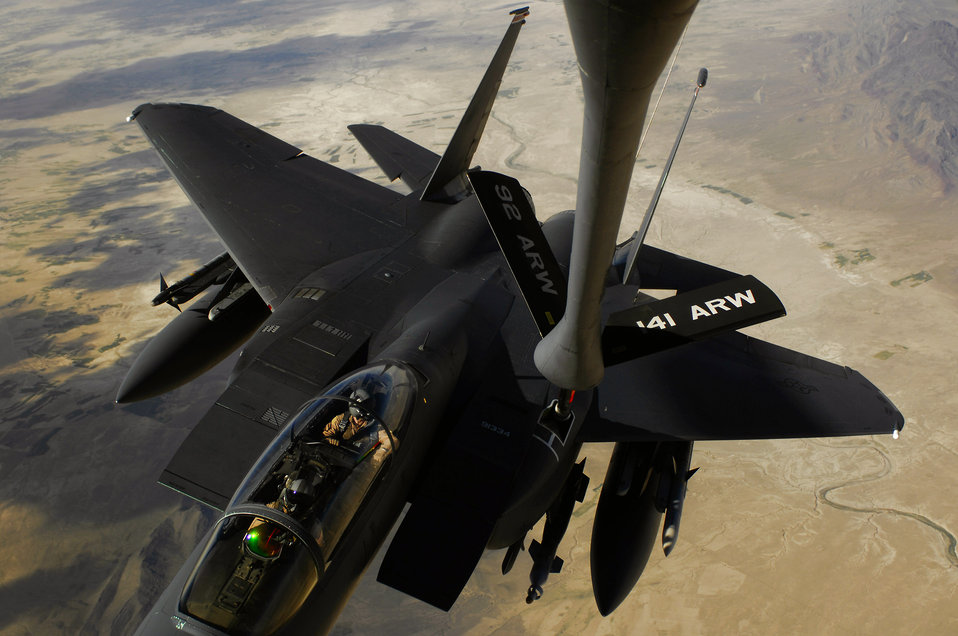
Airpower summary: F-15Es target anti-Afghan forces

An F-15E Strike Eagle aircraft receives fuel from a KC-135 Stratotanker during a mission over Afghanistan. The F-15E provides close-air support and armed aerial overwatch to deter enemy activities.